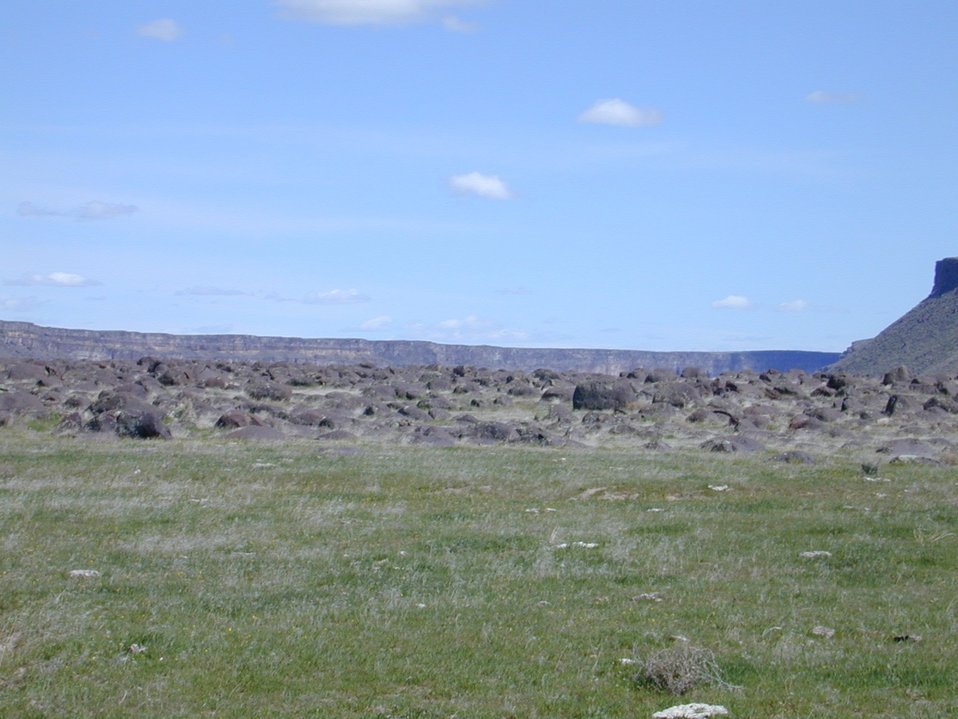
Snake River Birds of Prey National Conservation Area Lower Snake River District LSRD Snake River Canyon